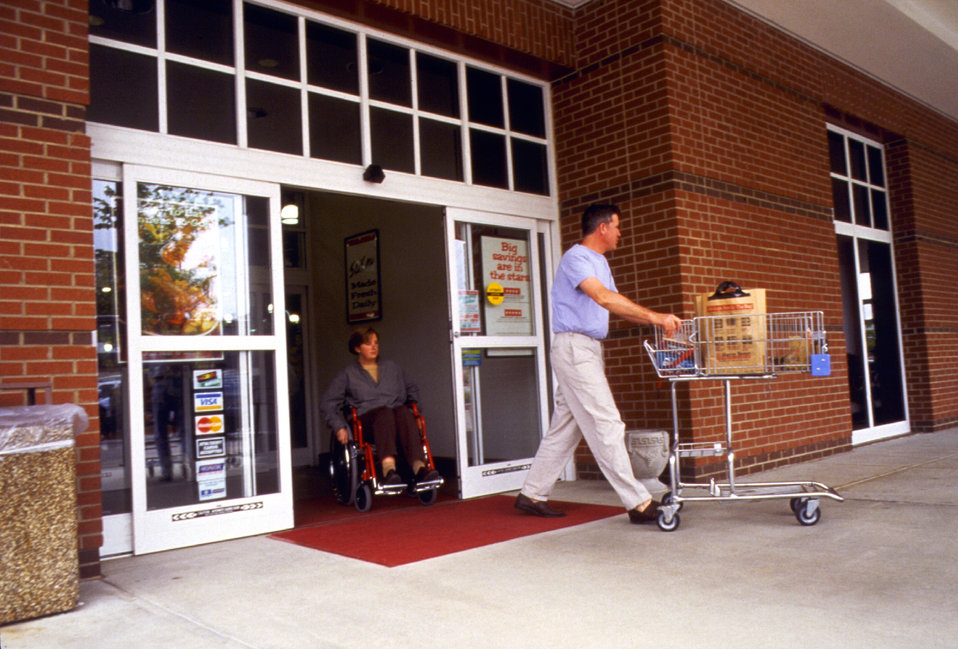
In this 1996 image, a wheelchair-seated woman was seen as she was about to pass through an automatic doorway of a grocery store through which a walking man had just passed as he was pushing his grocery cart. Widely used, 'no-touch' automatic doors accommodate all types of users, including the mobility-challenged, as well as those whose hands are filled with purchases. Simple, and in common use, the wide automatic door is an excellent example of Universal Design. Other facilities should, where possible, consider this option.